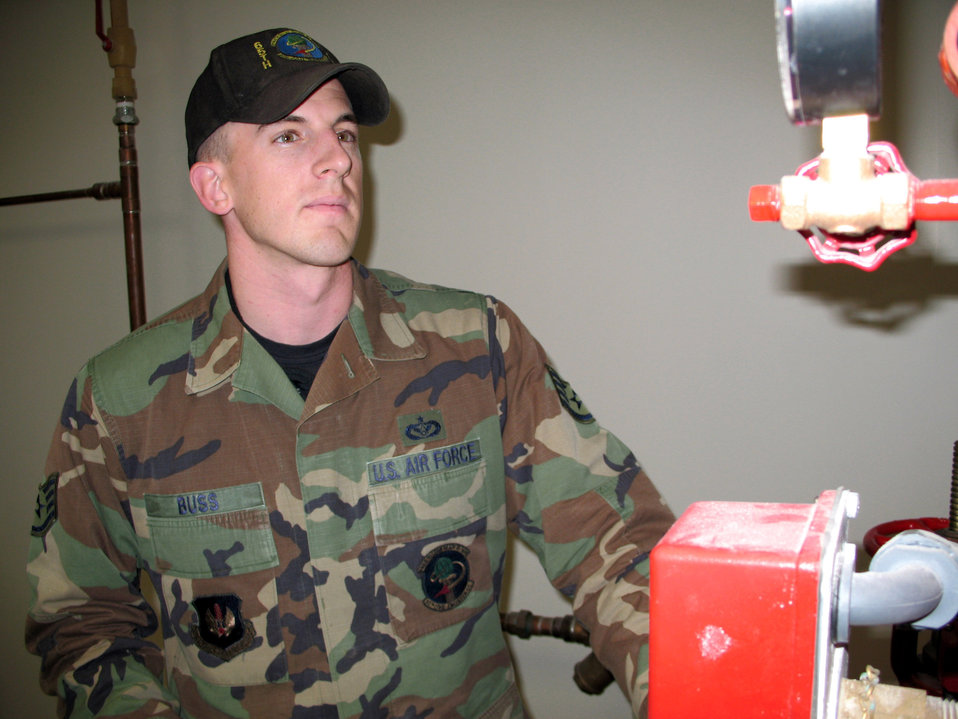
Lajes NCO's job saves water, money

Staff Sgt. Kellen Buss conducts a routine check on a water system Feb. 14 at Lajes Field in the Azores. He is assigned to the utilities shop for the 65th Civil Engineer Squadron.